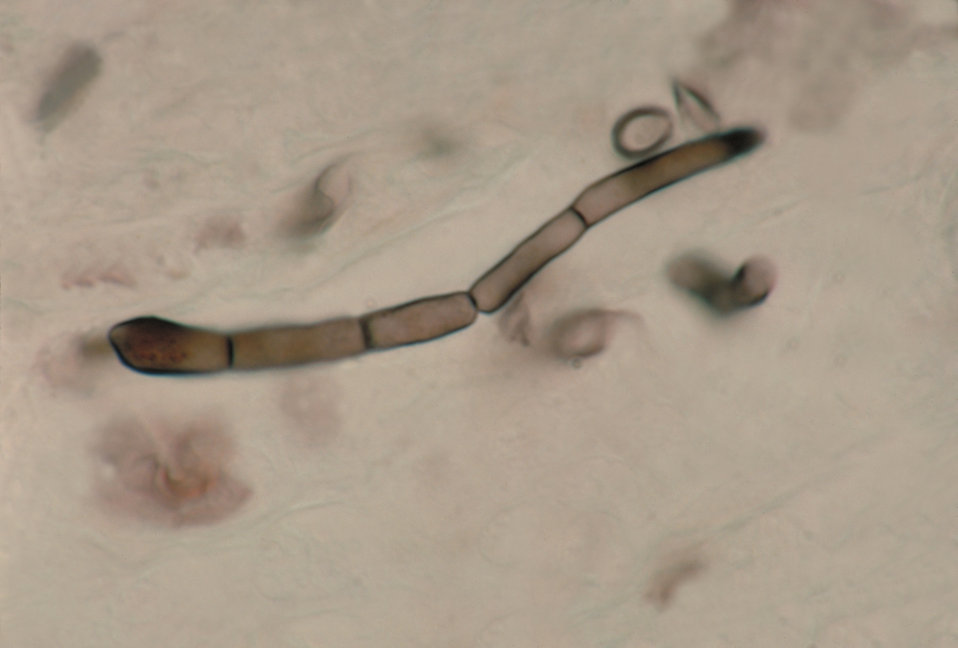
A micrograph revealing histopathologic changes in phaeohyphomycosis due to Exserohilum rostratum.